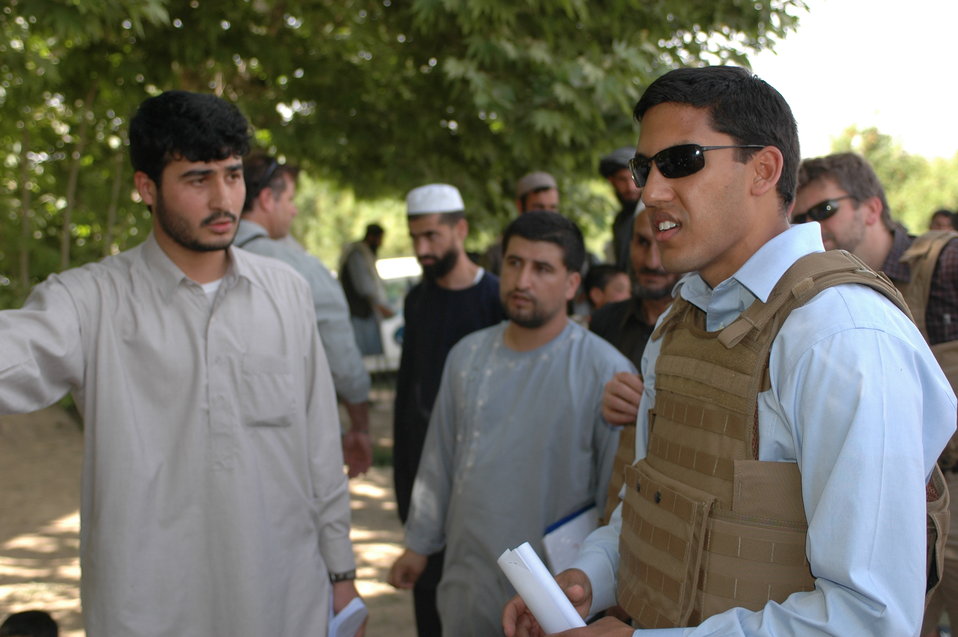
Dr Shah Visits Argandab April 10, 2010